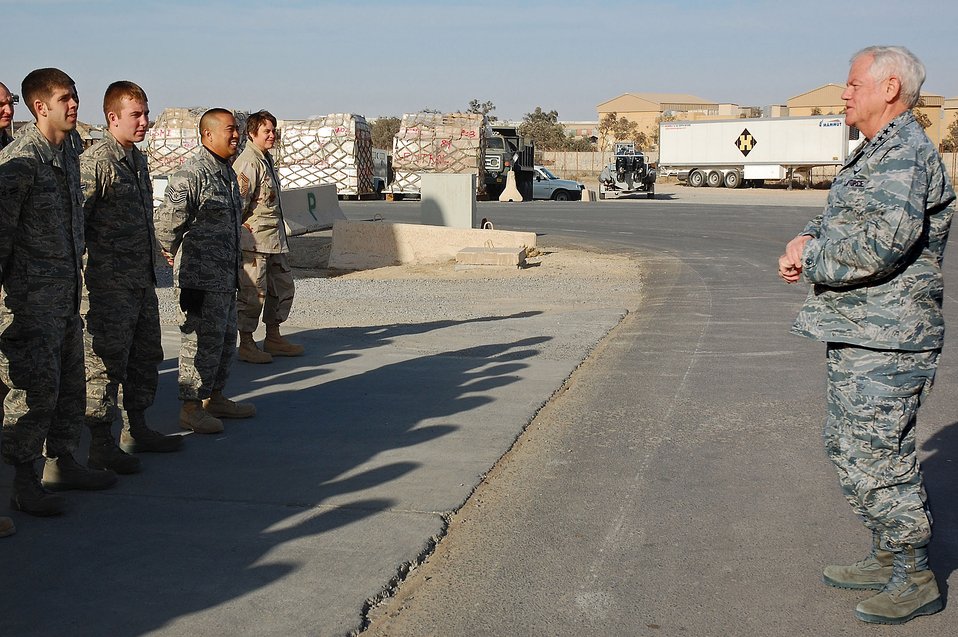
AMC commander visits Airmen in Southwest Asia

Gen. Arthur J. Lichte visits members of the 386th Expeditionary Logistics Readiness Squadron Aerial Port Flight Jan. 7 at a Southwest Asia air base. General Lichte, commander of Air Mobility Command, was making his first visit downrange since taking command in September.